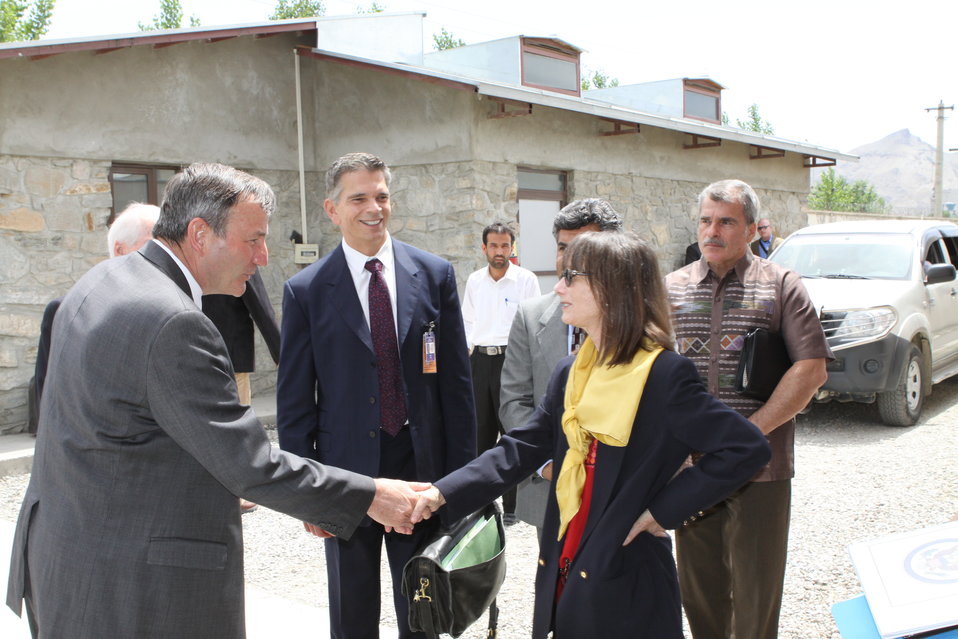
100526 AUAF Graduation 022